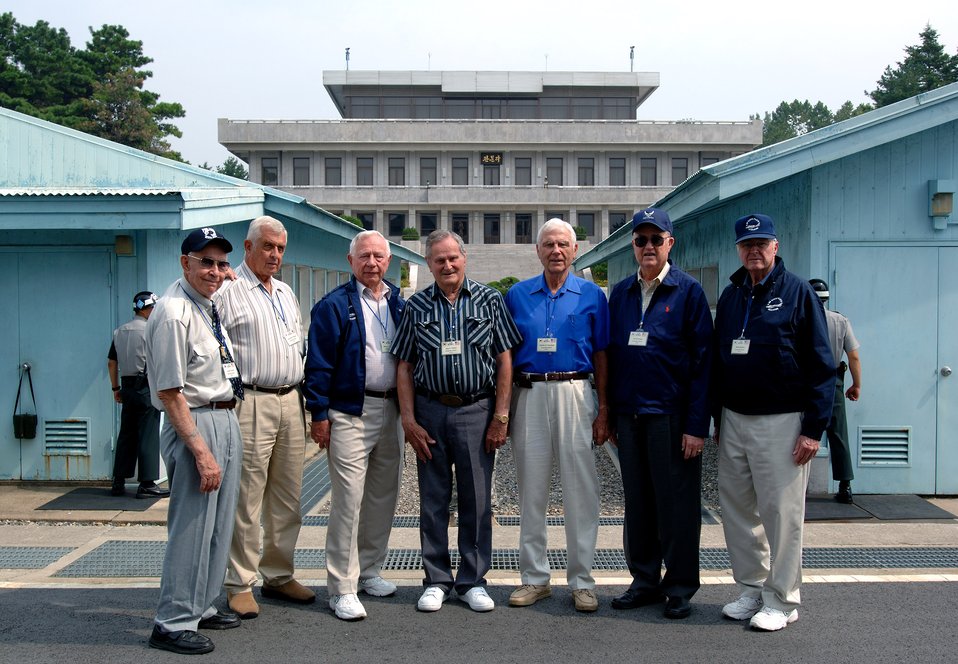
Korean War aces enlighten multitudes about their exploits

Seven Korean War aces take time for a photo in the Korean Demilitarized Zone during a Sept. 13 tour held to honor Korean War veterans in Panmunjeom, South Korea. The joint security area is the only place where North and South connect. The veterans were visiting South Korea during a weeklong observance of the Air Force's 60th Anniversary.